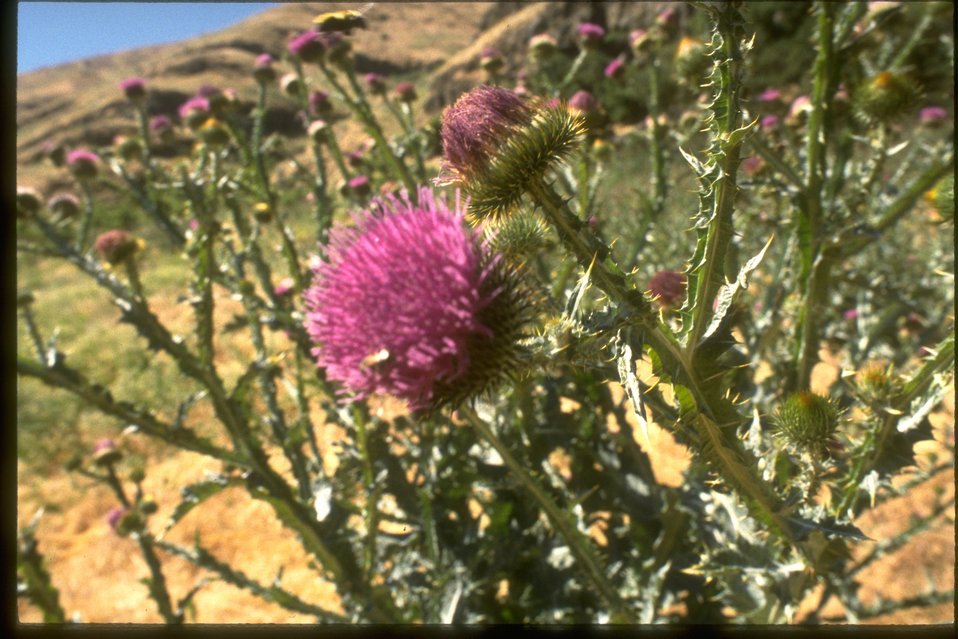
Scotch Thistle in the Baker Resource Area.